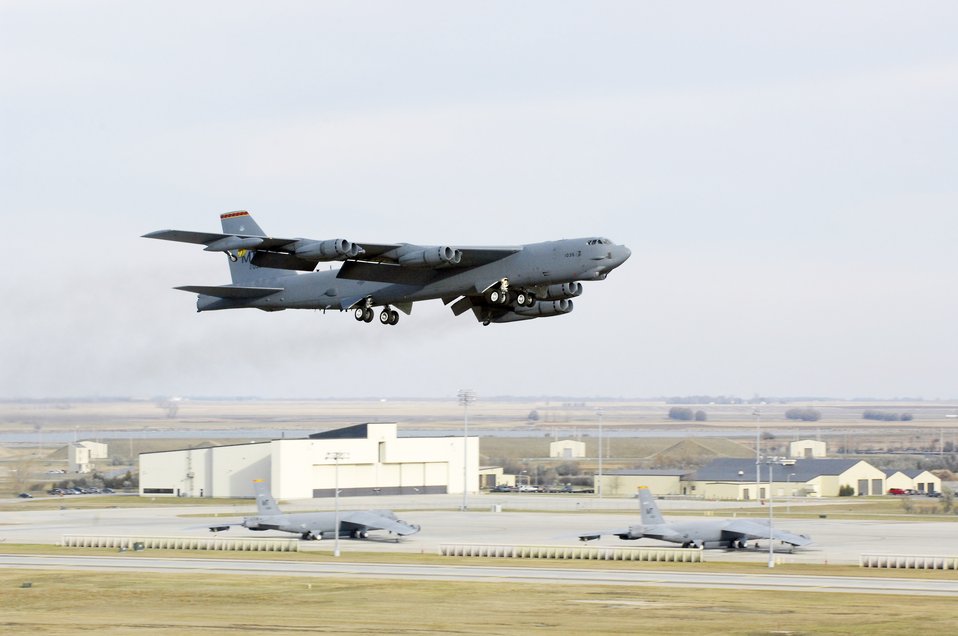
Rapid launch

A B-52H Stratofortress soars through the sky during the rapid launch portion of Exercise Prairie Vigilance at Minot Air Force Base, N.D., Nov. 5, 2009. The exercise is a combined-wing nuclear operational readiness exercise that demonstrates safe, secure, reliable nuclear weapons standards. A sequence of seven B-52s successfully launched confirming the wing's agile ability to respond when called upon.